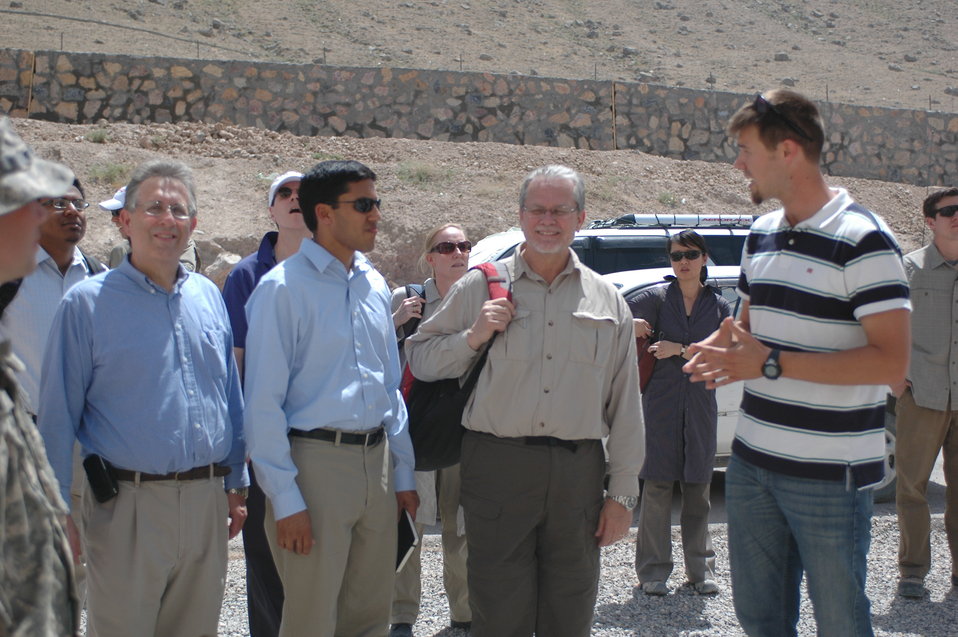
Dr Shah Visits Kandahar April 9, 2010